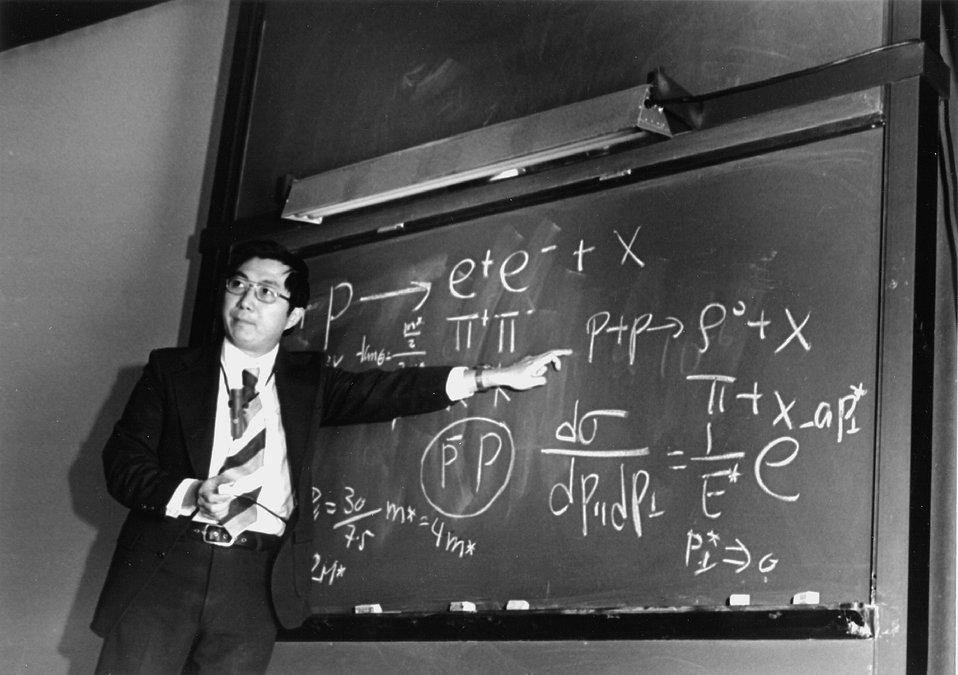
Samuel C. C. Ting, Nobel Prize winner in 1976, and E. O. Lawrence Awards winner in 1975.